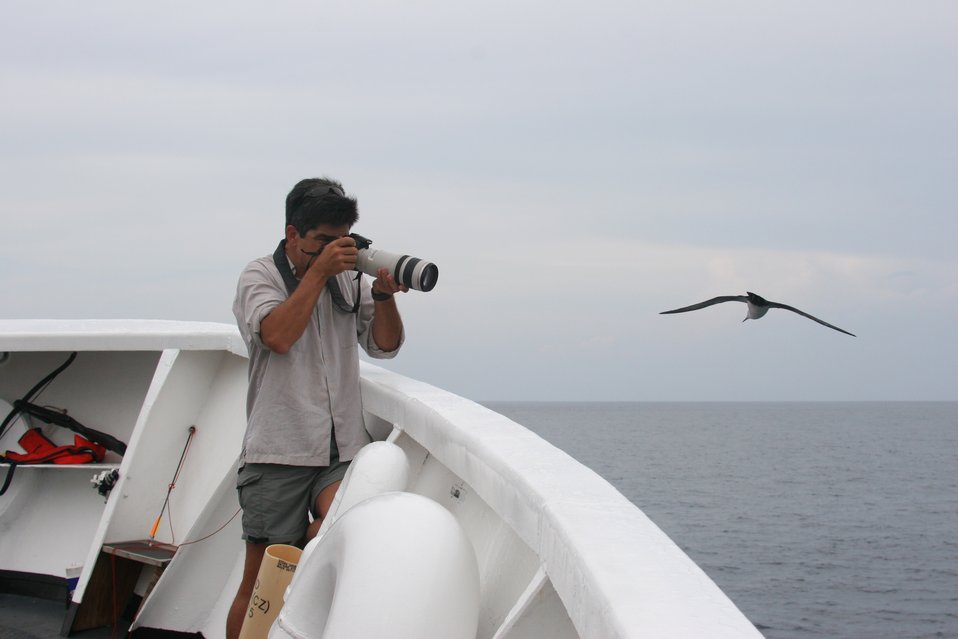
Photographer and bird go eye-to-eye on the NOAA Ship DAVID STARR JORDAN.